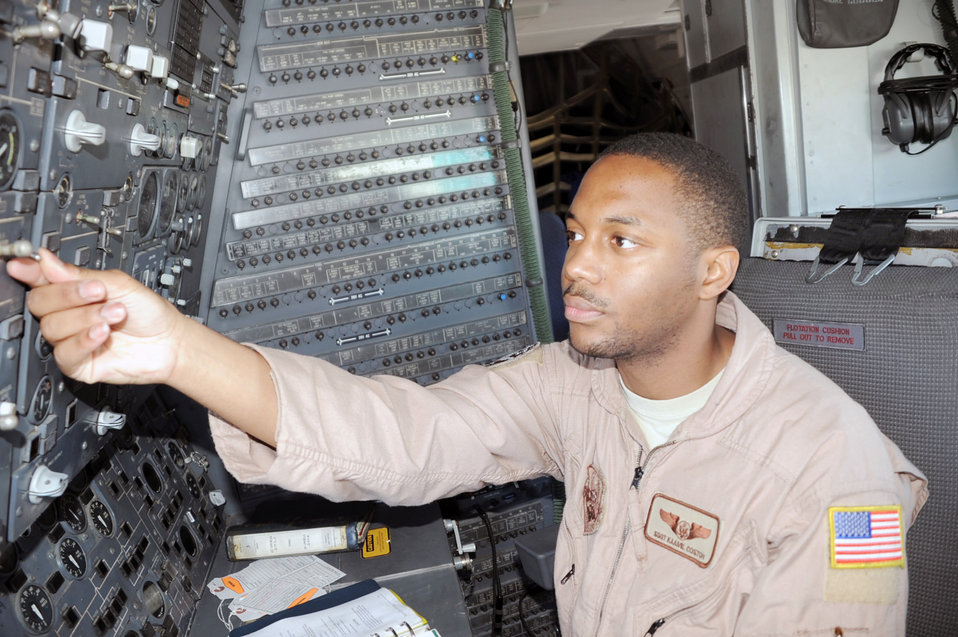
KC-10s keep aircraft flying in Southwest Asia

Working at his station in a KC-10 Extender, Staff Sgt. Kaamil Coston ensures the aircraft is ready to fly when a mission is prepared at an air base in Southwest Asia Jan. 8, 2009. Sergeant Coston is KC-10 flight engineer with the 908th Expeditionary Air Refueling Squadron, and deployed from the 2nd Air Refueling Squadron at McGuire Air Force Base, N.J.